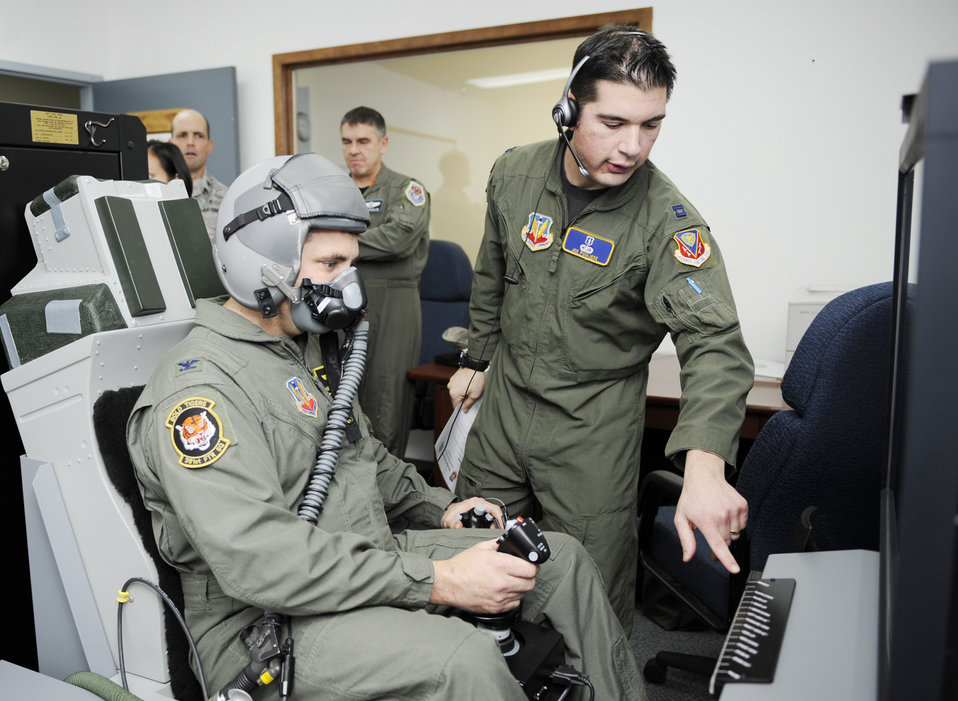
Mountain Home AFB receives hypoxia simulator

Capt. Joseph Pugliese briefs Col. Kevin Connolly, 366th Medical Group commander, on a simulator-based hypoxia demonstrator for fighter aircrew Dec. 16, 2009, at Mountain Home Air Force Base, Idaho. Captain Pugliese is an aerospace and operational physiologist with the 366th Aerospace Medicine Squadron.